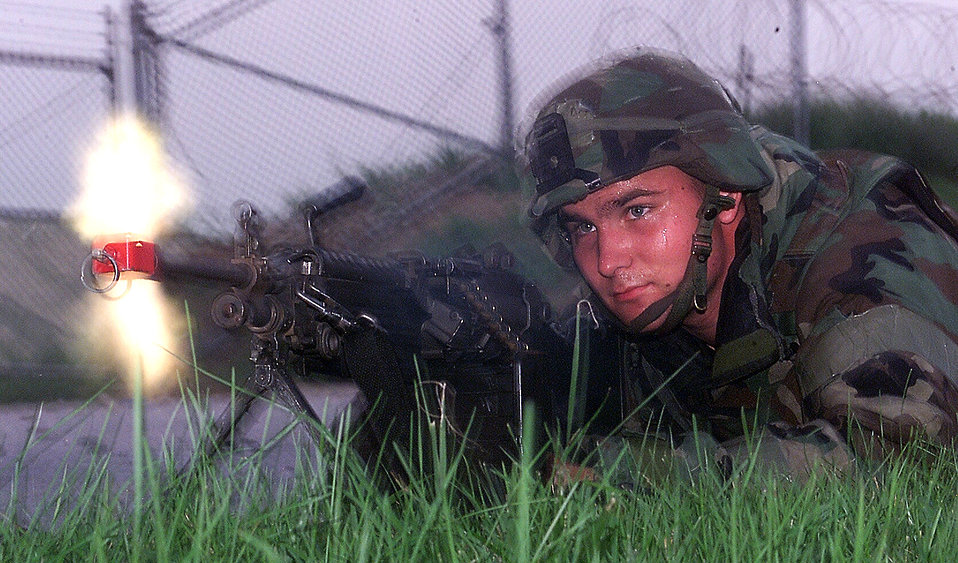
Laying down fire

OSAN AIR BASE, South Korea -- Airman 1st Class Ryan Zemanek fires on enemy forces as they ambush his convoy July 22 during exercise Beverly Bulldog 04-03. Airman Zemanek is a security forces Airman with the 51st Security Forces Squadron.